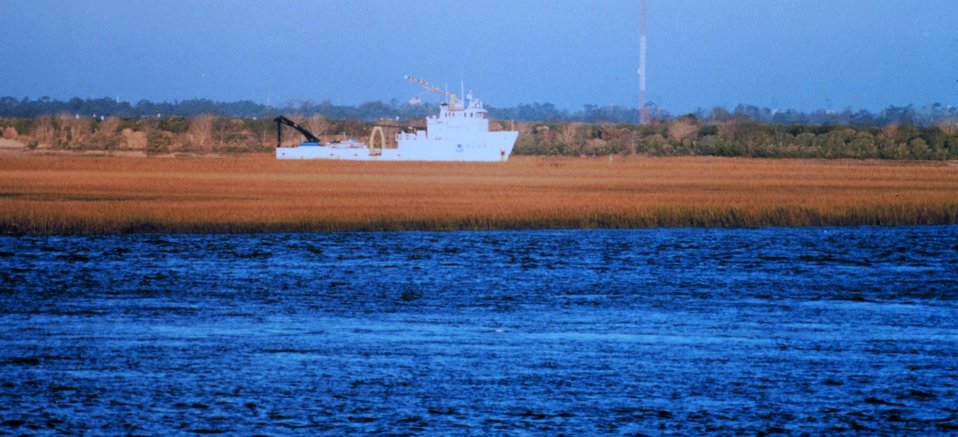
NOAA Ship FERREL in Intracoastal Waterway north of Charleston